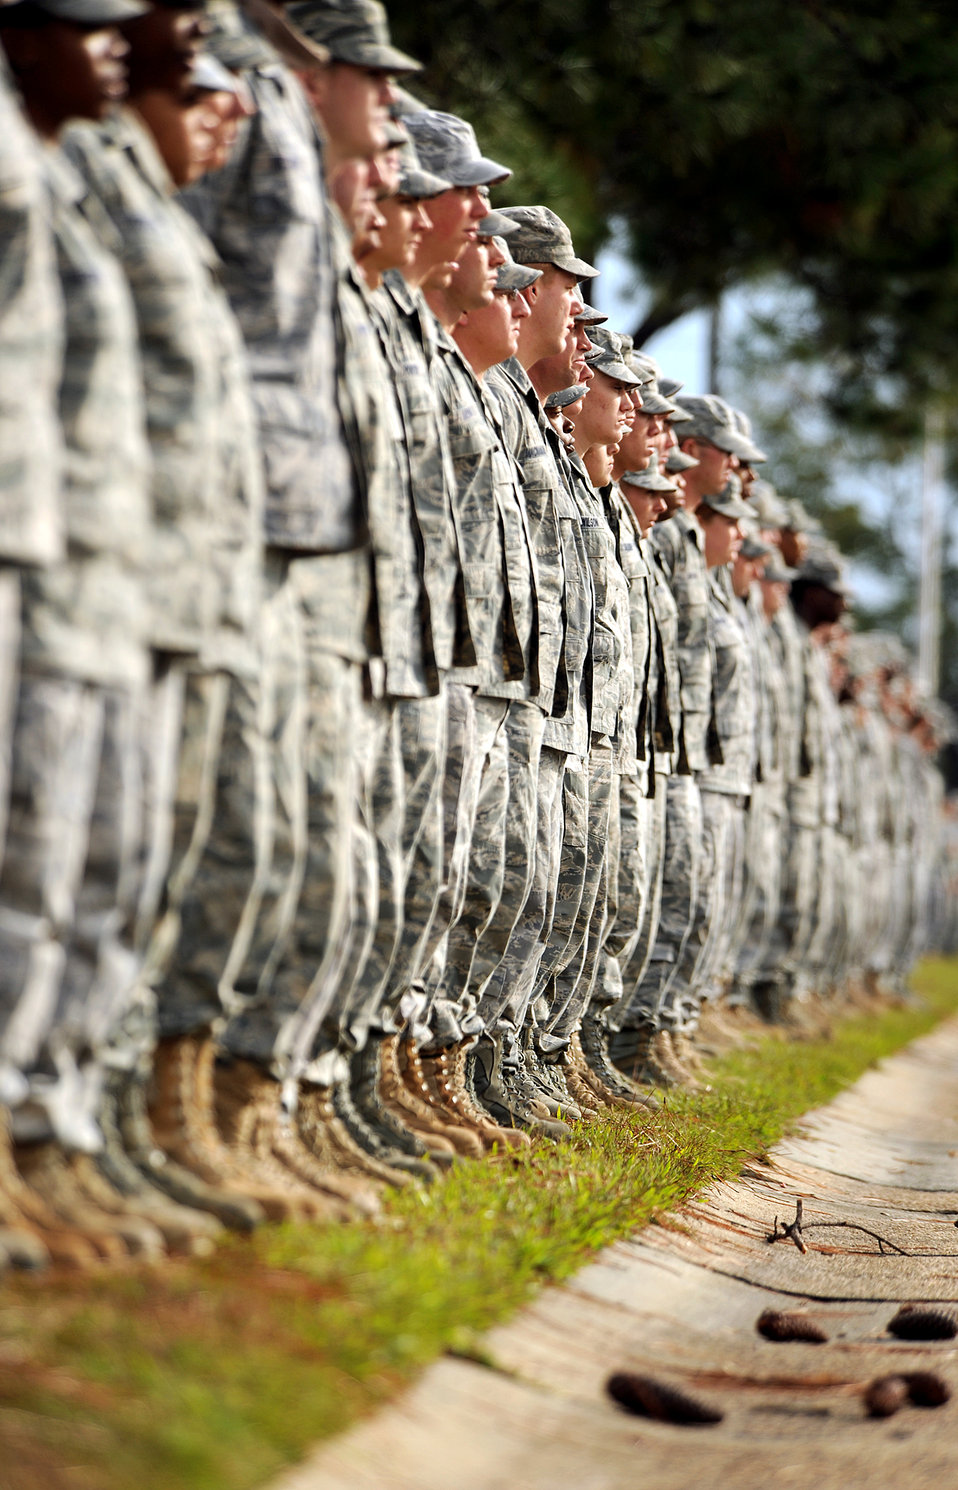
Moody community pay respect to fallen warrior

Airmen from the 824th Security Forces Squadron await the order of attention during a dignified transfer for Army Staff Sgt Briand T. Williams, a fallen Soldier from Fort Benning, Ga., Dec. 3, 2009, at Moody Air Force Base, Ga. Sergeant Williams was killed in action when his unit was attacked by insurgents while deployed in Southwest Asia.